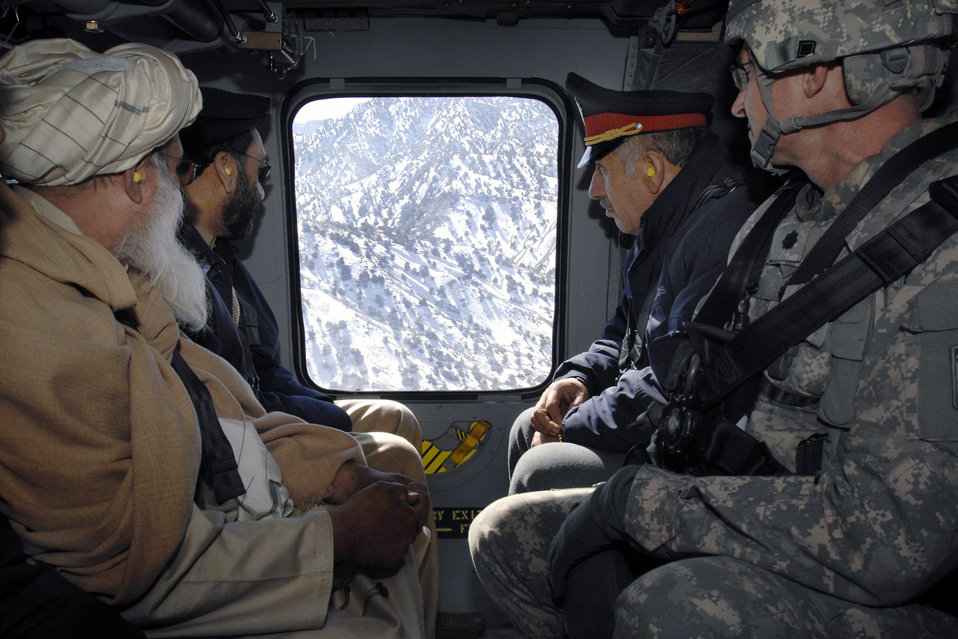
Transportation to a district meeting

Lt. Col. Dan Moy, far right, commander for Afghanistan's Paktia Provincial Reconstruction Team, travels by helicopter to a remote combat outpost Feb. 8 with the provincial governor, police chief and a religious leader for a meeting with district leaders.